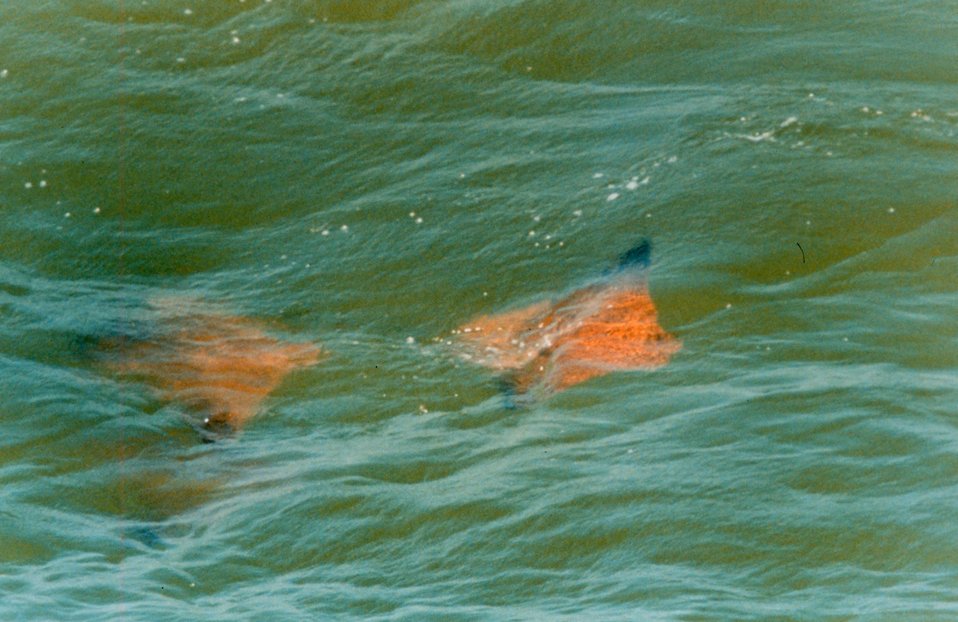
Schools of Cow-nosed Rays - Rhinoptera bonasus - are a familiar sight in the Chesapeake Bay.